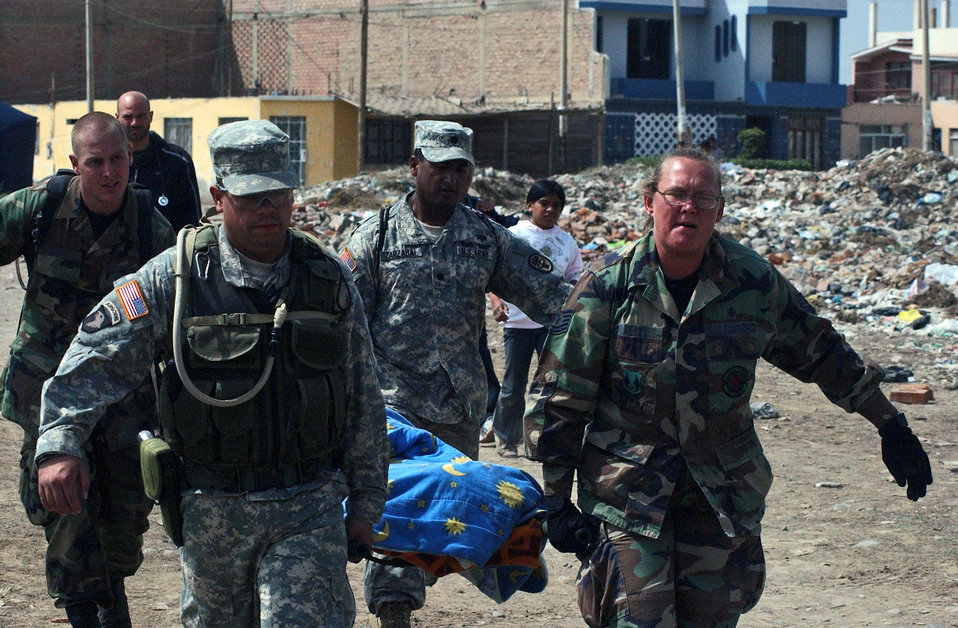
Servicemembers treats 1,300 patients in Peru

From left, Senior Airman Shaun Emery, Army Spc. Jose Hernandez, Army Lt. Col. Eduardo Zarzabal and Tech. Sgt Melissa Walker carry a woman from her home to the site of the team's medical care site Aug. 20 in Pisco, Peru. They are members of the Joint Task Force-Bravo medical humanitarian relief team deployed from Soto Cano Air Base, Honduras. The team arrived in Peru Aug. 17 to provide medical humanitarian assistance to the citizens of Pisco following an 8.0 magnitude earthquake Aug. 15.